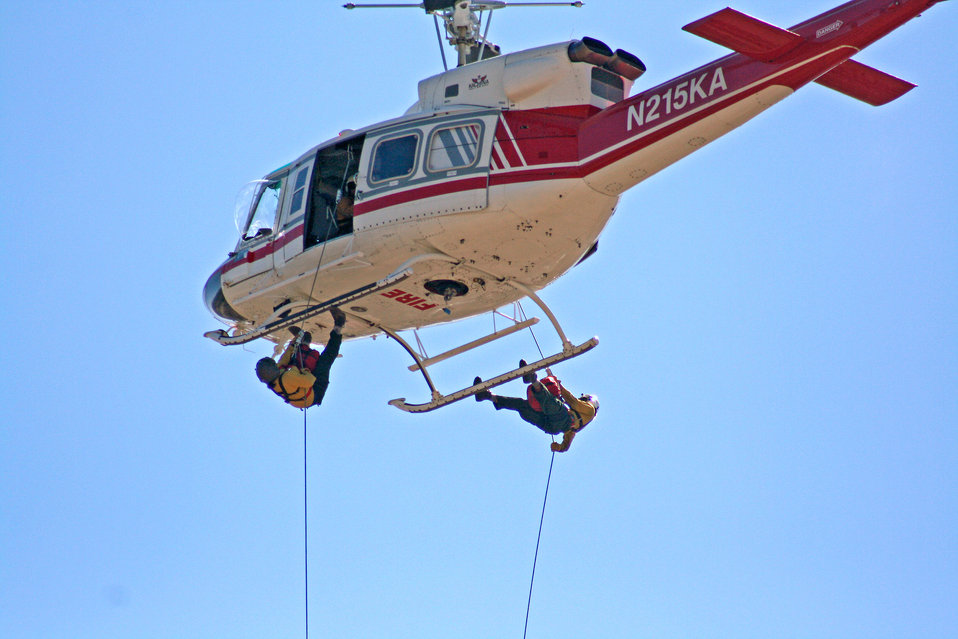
Helirappellers

Heli-Rappellers can be called upon when fire fighters need to be inserted into the forest to fight fire where there is no easy access by road or a place for a helicopter to land close to the fire. The helicopter will hover anywhere between 50 and 200 feet while the crew members rappel in. Once the crew is on the ground all of their saw packs, tools and supplies are lowered down to them so they can quickly get to work fighting fire.